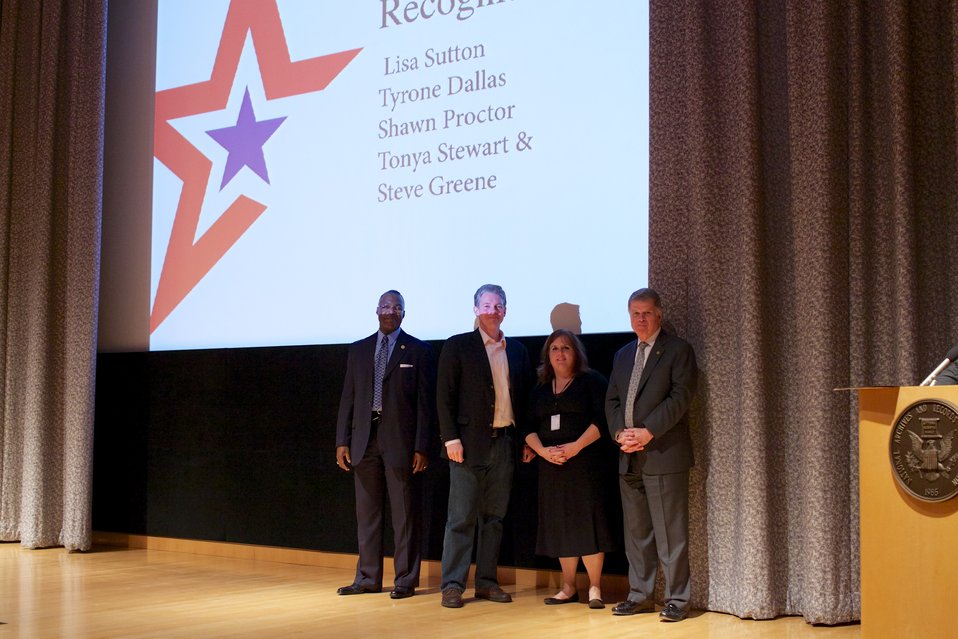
CFC Recognition Event